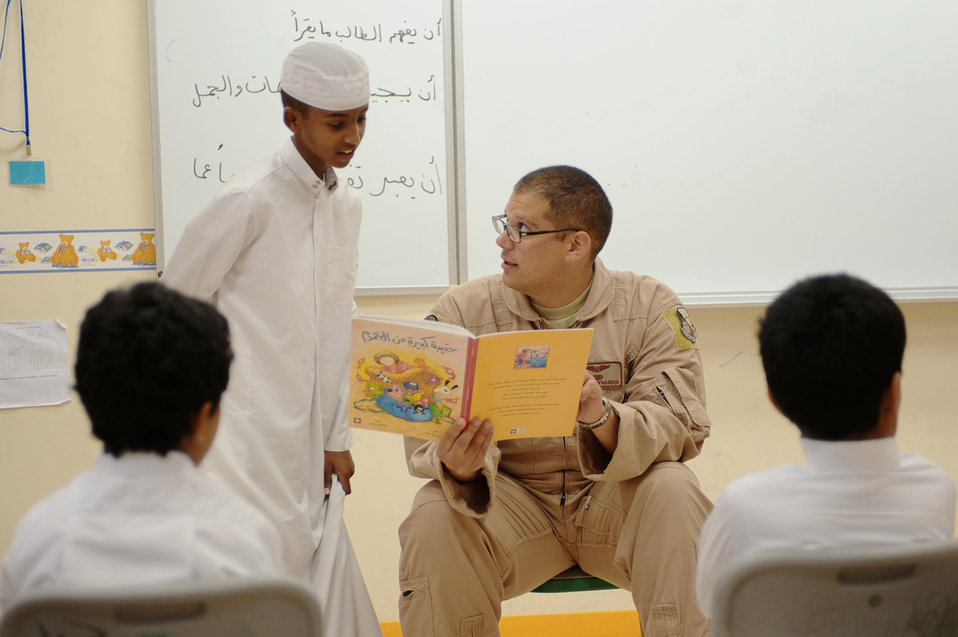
Airmen form Goodwill Amassador Team in Southwest Asia

Senior Airman Joseph Warren reads a book aloud while a third-grader assists him with his Arabic during